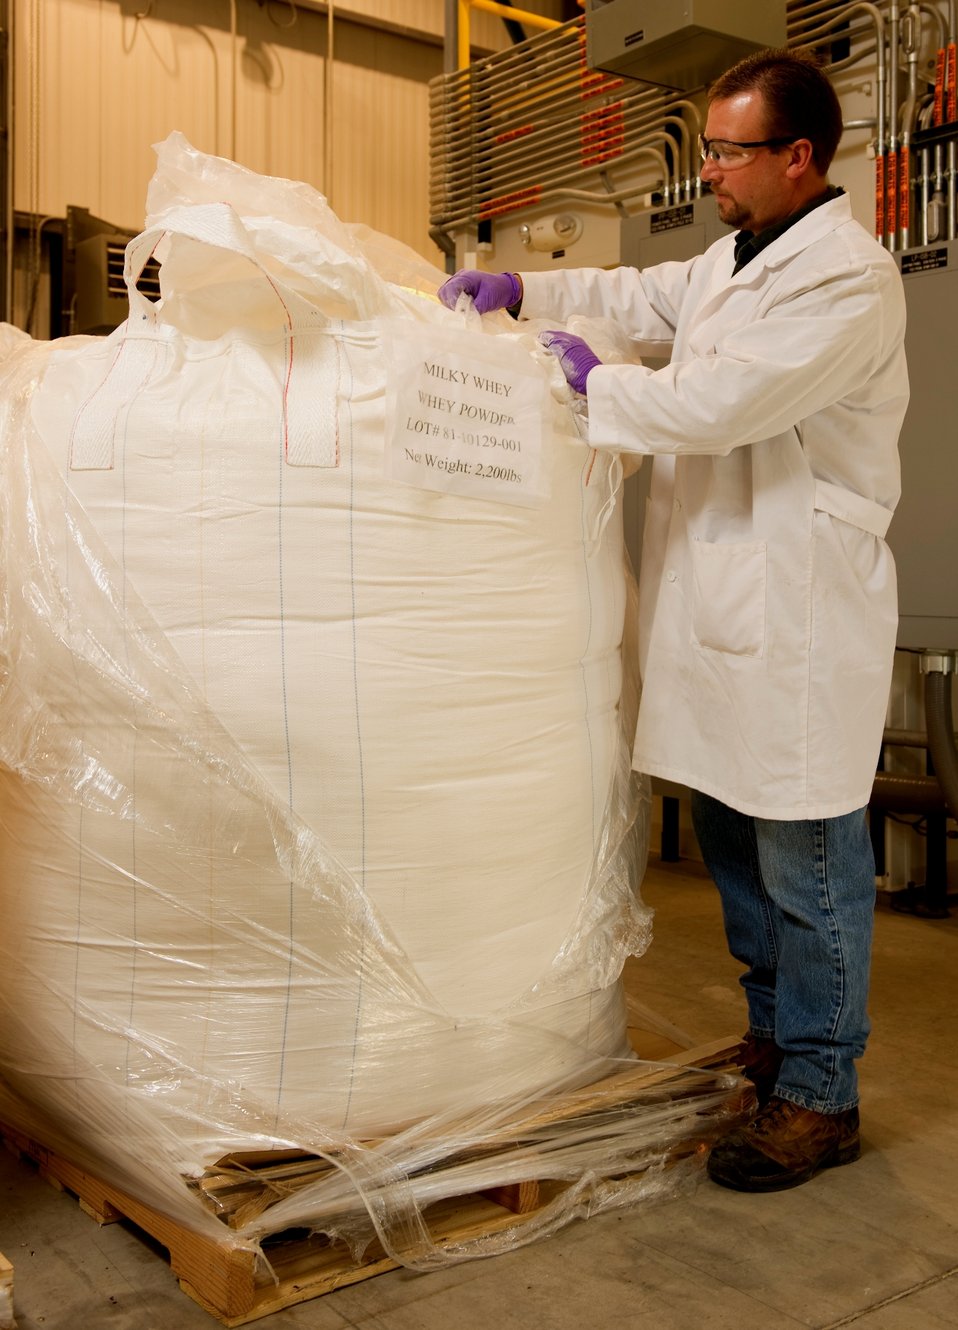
Idaho Site Enlists Whey-Eating Microbes in Groundwater Cleanup

Workers at the Idaho site have enlisted microbes to help remediate previously contaminated groundwater and advance the protection of the Snake River Plain Aquifer.

The microbes in the aquifer are fed a mixture of sodium lactate and whey powder, a common ingredient found in sport protein drinks.

“The microbes eat it, and in the process break down trichloroethylene (TCE). Although TCE is a carcinogen, the end products are harmless,” said Lorie Cahn, environmental lead for Environmental Restoration (ER) and Comprehensive Environmental Response, Compensation, and Liability Act (CERCLA) at CH2M-WG Idaho (CWI), the Idaho site’s main cleanup contractor.